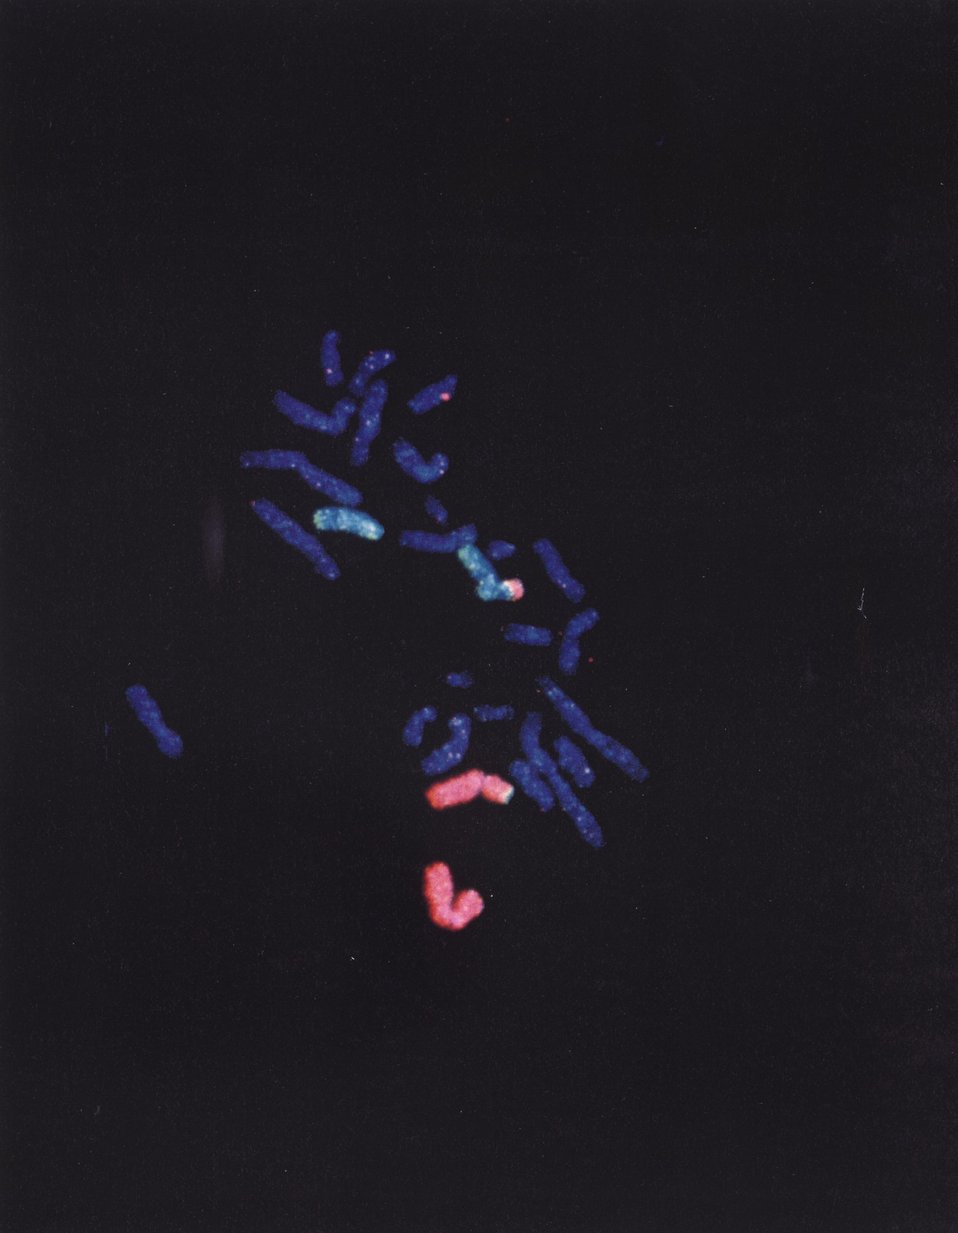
New Technology Identifies Chromosome Abnormalities. Developed at LLNL, whole chromosome painting permits significantly faster and more accurate identification of the human chromosome abnormalities frequently present in cancer.